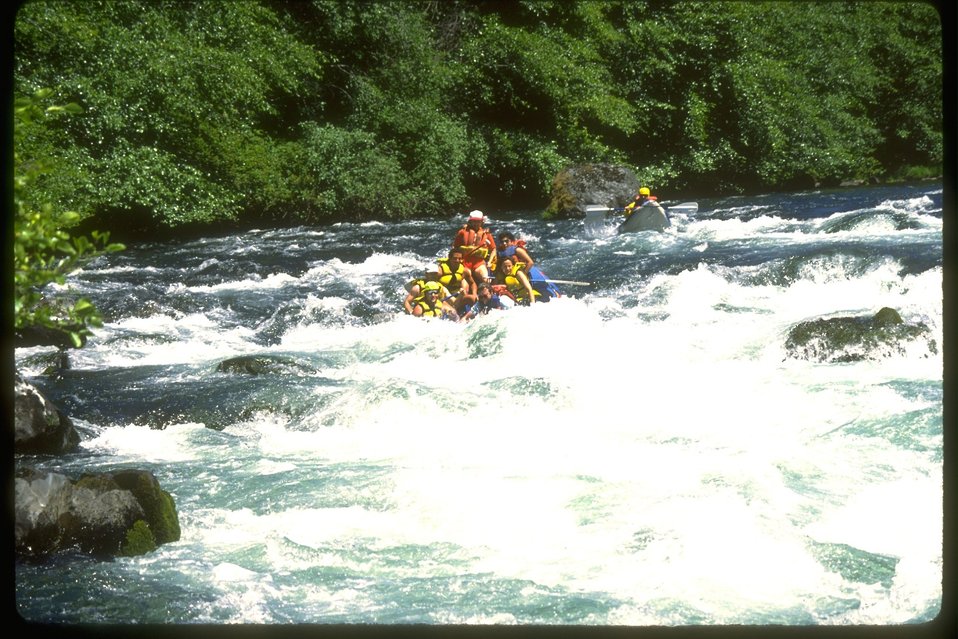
Rafting on the North Umpqua River.